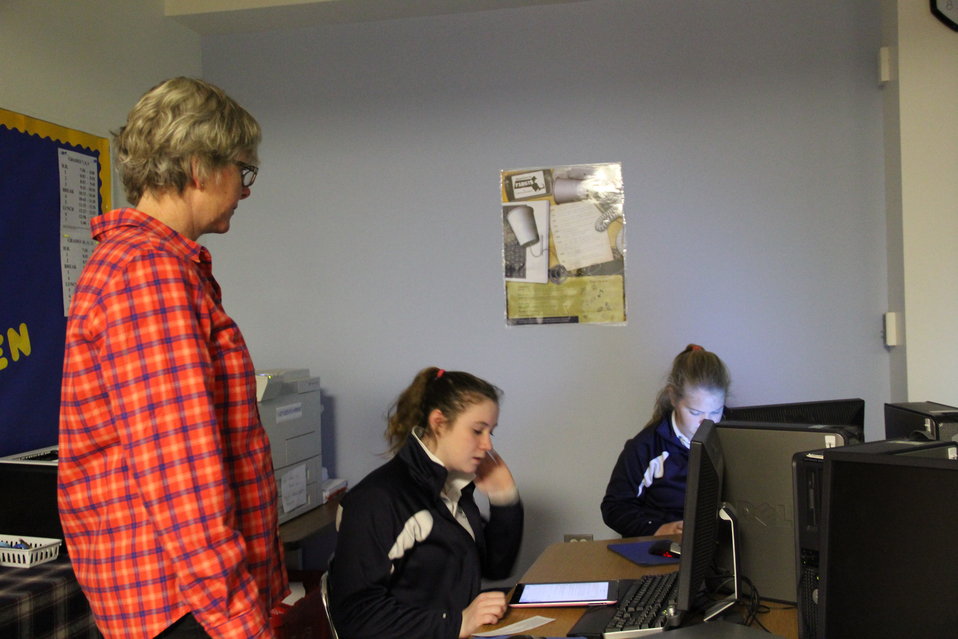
What's Your Drug IQ?

Teens at Mount Alvernia High School in Newton, Mass. take the NIDA's IQ Challenge during NDFW's Chat Day 2014.